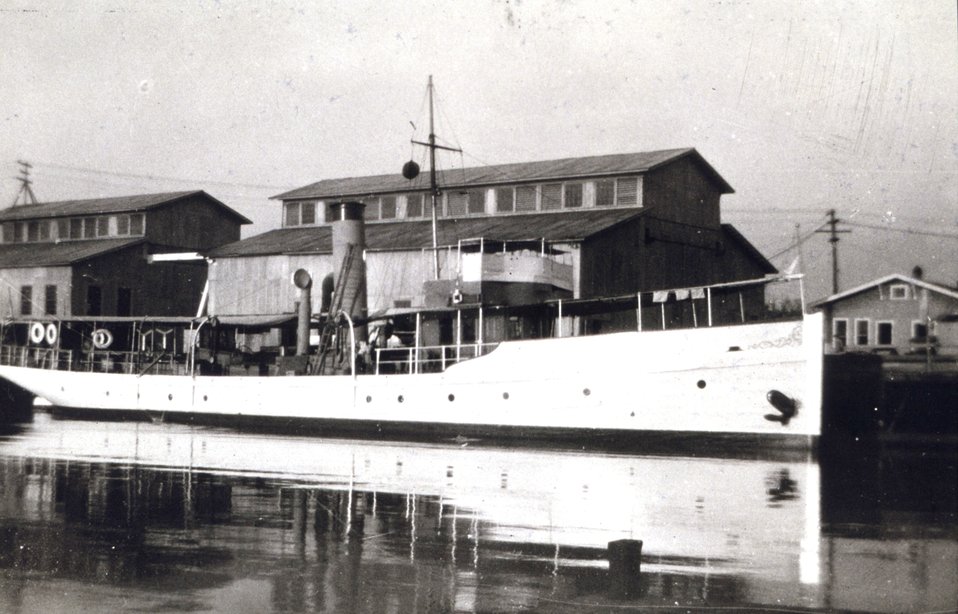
Coast and Geodetic Survey Ship HYDROGRAPHER. In service 1901-1928. Atlantic service